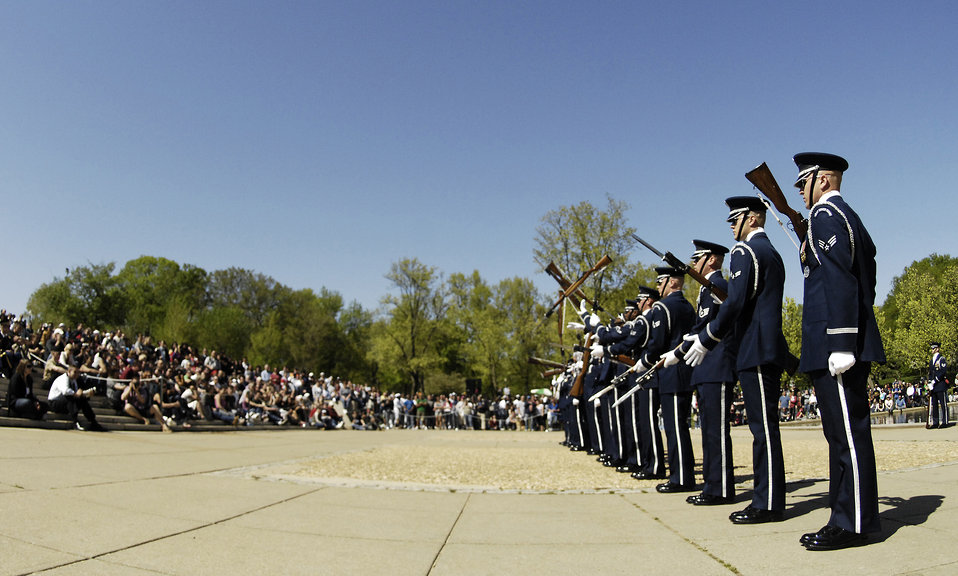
Joint service drill competition held at Lincoln Memorial

Members of the U.S. Air Force Honor Guard Drill Team perform during the 3rd Annual Joint Service Drill Team Exhibition April 10, 2010, at the Lincoln Memorial in Washington, D.C. The event featured drill team performances from all five military branches.